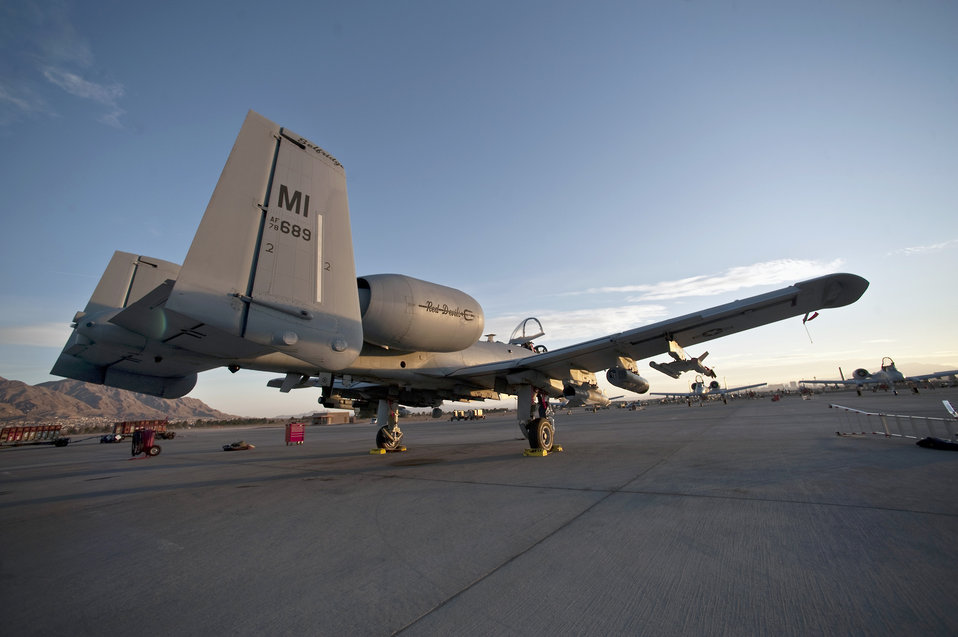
Red Flag 11-3

An A-10 Thunderbolt II sits on the flightline before a training mission Feb. 24, 2011, during exercise Red Flag at Nellis Air Force Base, Nev.